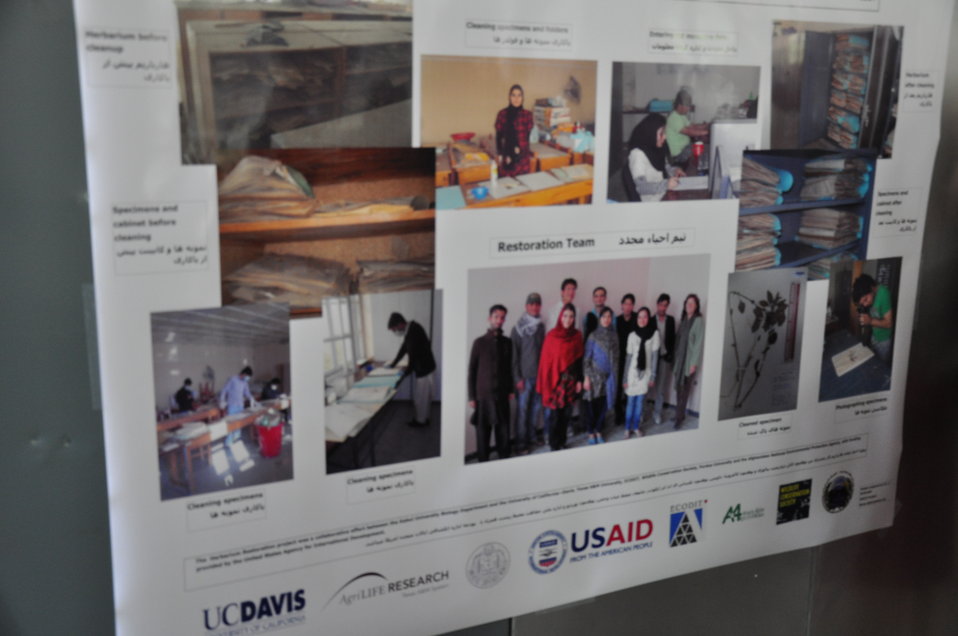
Kabul University Herbarium